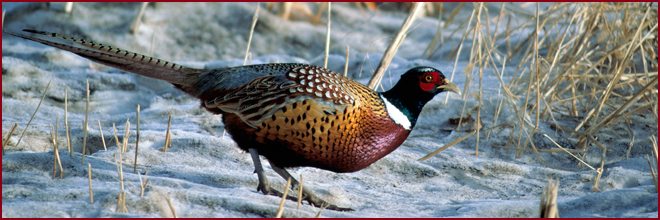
Pheasant - McKay Creek NWR

Pheasants are usually seen in the uplands of McKay Creek NWR in the sagebrush and bitterbrush.